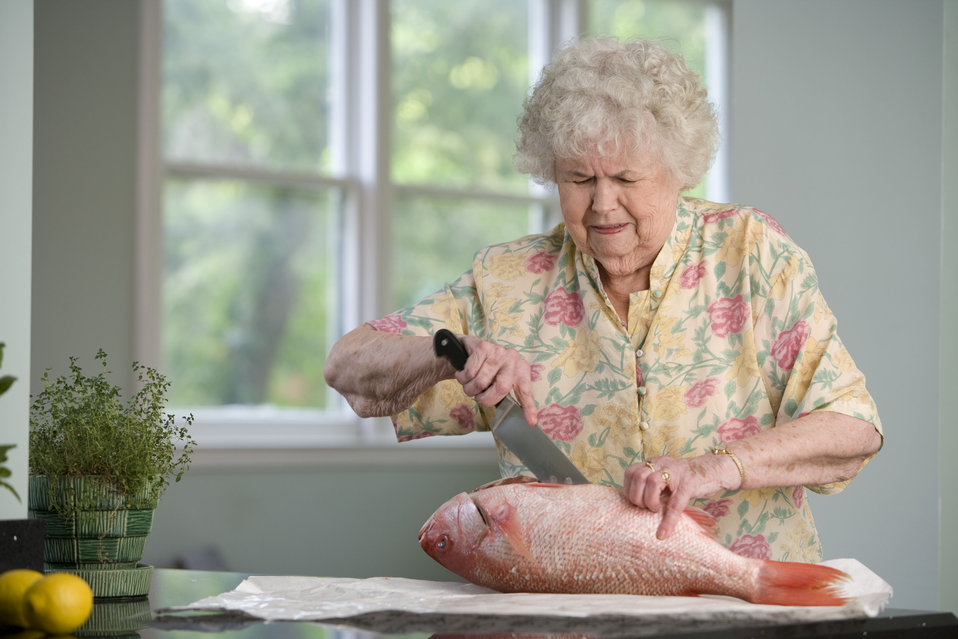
Here, an elderly woman was in the process of preparing a fresh fish on her clean kitchen counter. Carefully using a large knife, the woman had cut into the fish's belly, and would subsequently extract the internal organs prior to finally cutting away the fillets.